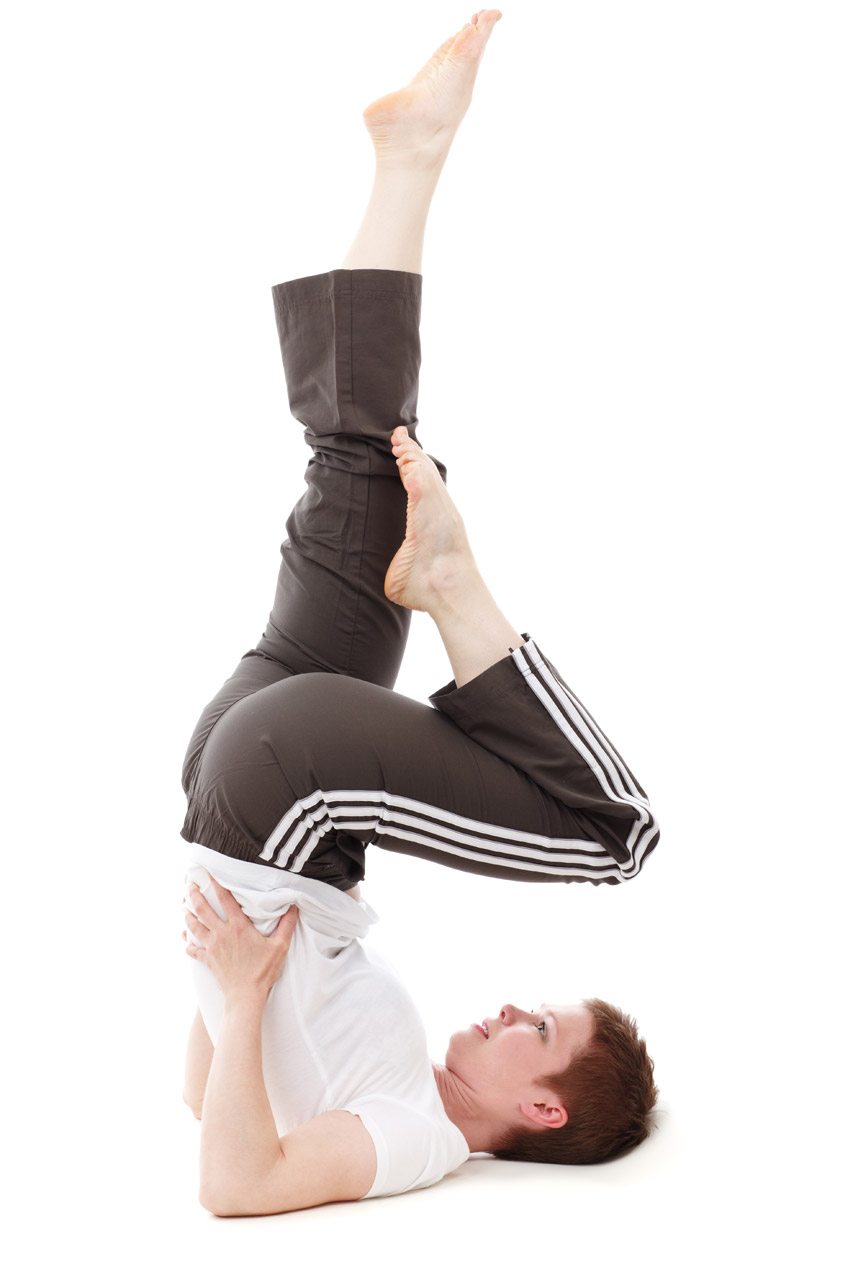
Woman in yoga pose

Young woman doing yoga poses isolated on white background - jana svojsova.